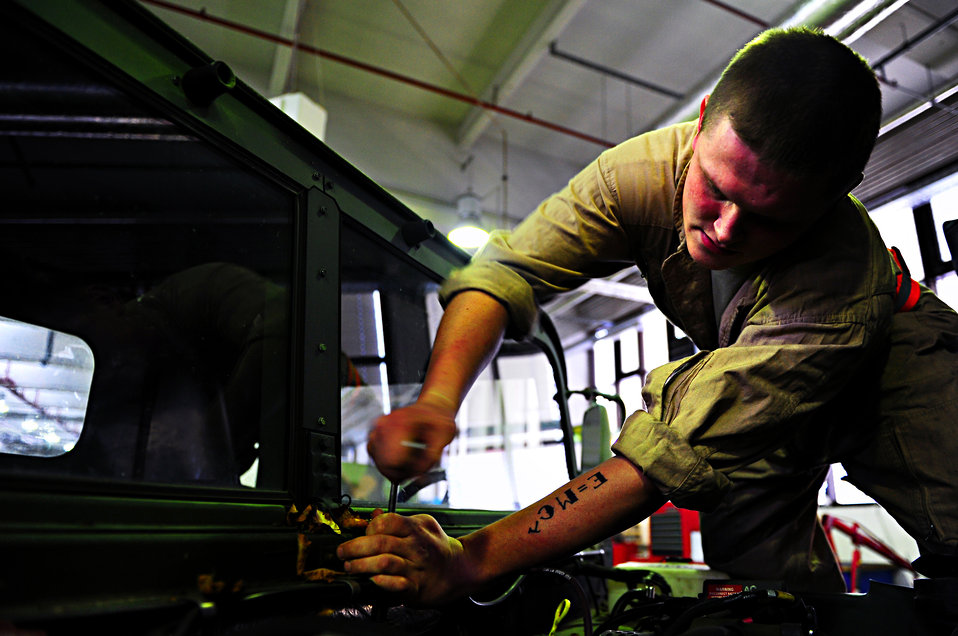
Turnin' wrenches

Senior Airman Seth Milhalik troubleshoots the fuel system in a Humvee Nov. 28, 2011, at Ramstein Air Base, Germany. The vehicle mechanics are responsible for repairs and regular maintenance procedures to ensure vehicle readiness. Milhalik is an 86th Vehicle Readiness Squadron vehicle mechanic.